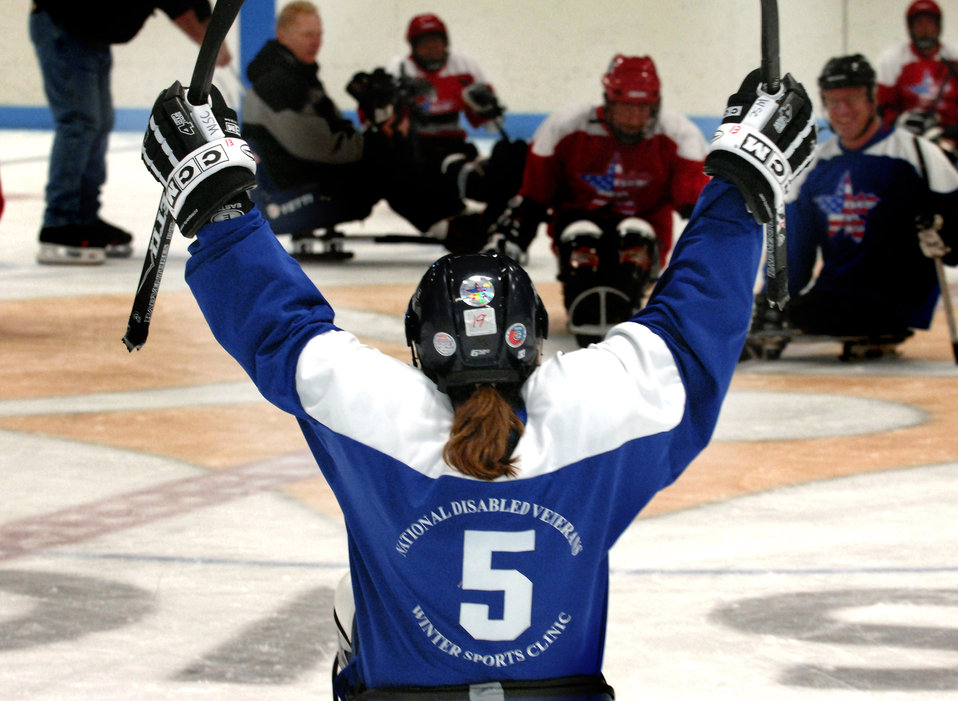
Winter sports clinic helps veterans

A disabled veteran scores a point at a sled hockey game during the 22nd National Disabled Veterans Winter Sports Clinic held at the Snowmass Village, Colo., April 2. The annual disabled learn-to-ski clinic helps motivate and rehabilitate disabled Department of Defense veterans. It is the largest of its kind in the world. The clinic instructs veterans on Alpine and Nordic skiing, rock climbing, snowmobiling, sled hockey, and more.